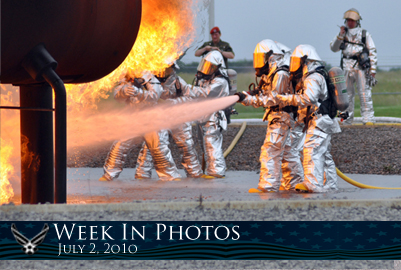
Week in Photos

Air Force Week in Photos for July 2, 2010, highlights photos from around the Air Force. In this photo by Master Sgt. Bob Barko Jr., 910th Civil Engineer Squadron firefighters conduct a demonstration at the Youngstown Air Reserve Station, Ohio, fire pit as German reserve officer Lt. Col. Patrick Hofmann looks on.